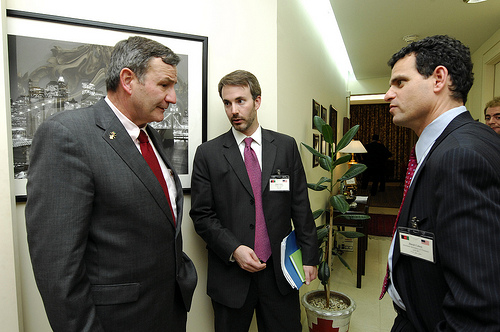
At the US Embassy in Kabul

US Ambassador to Afghanistan Karl W. Eikenberry, Treasury Attaché Stuart Jones and Assistant Secretary for Terrorist Financing David S. Cohen in Kabul.